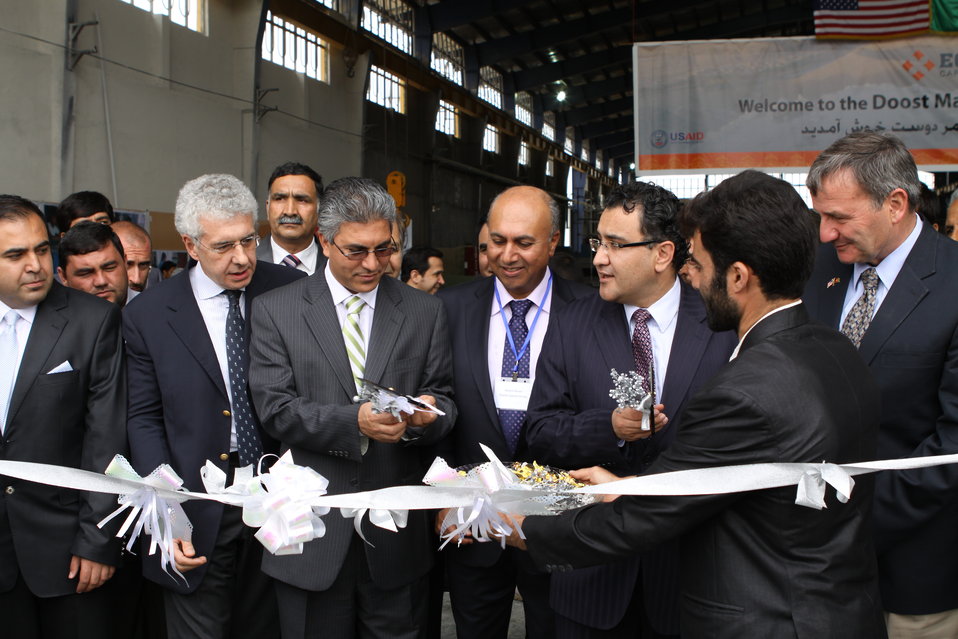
100525 Hirat Marble Conference 063